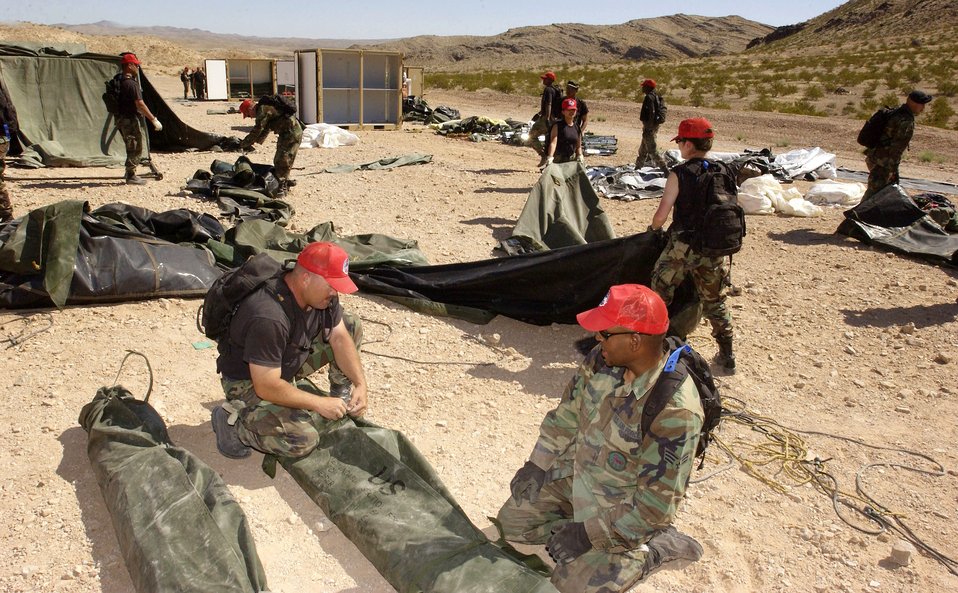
Red Horse in action

Airmen set up facilities during a bare-base build-up exercise at Nellis Air Force Base, Nev., April 8 to 9, 2006. The operation included beddown and construction operations for 120 Airmen. The camp had a mobile field kitchen with generators, reverse osmosis water purification unit and field latrine equipment. The Airmen are with the 555th Red Horse Civil Engineer Squadron